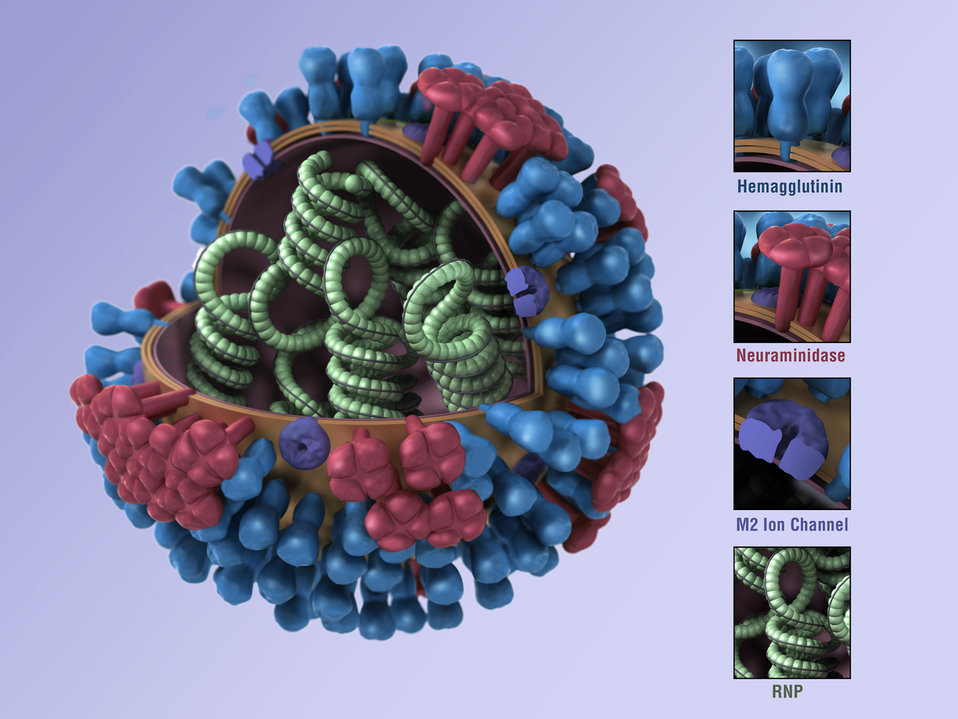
This illustration provides a 3D graphical representation of a generic influenza virion's ultrastructure, and is not specific to a seasonal, avian or 2009 H1N1 virus. In this particular view, a portion of the virion's protein coat, or 'capsid', has been cut away, revealing its inner nucleic acid core proteins. Note the key to the right identifying the virion's protein constituents. For a fully intact, complete view of this virus, see PHIL 11825.